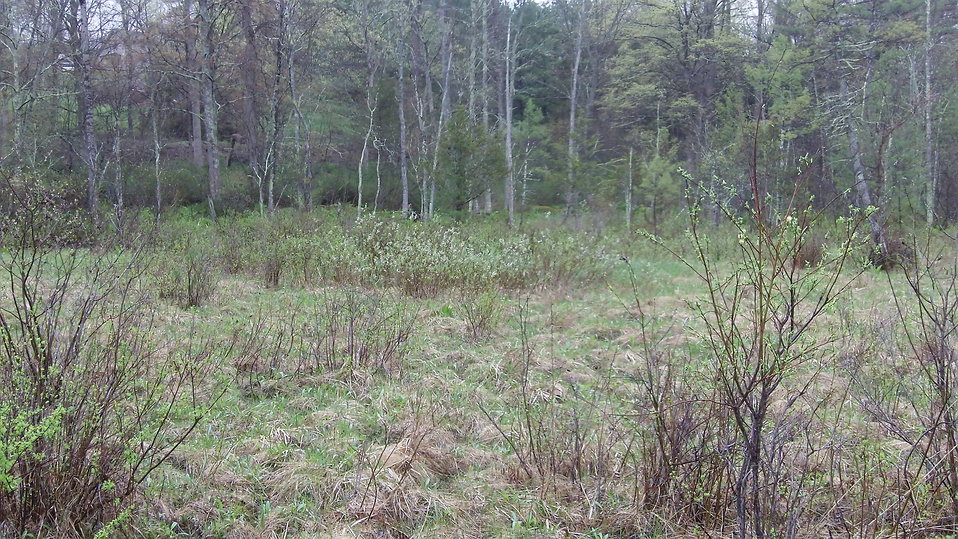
New England cottontail habitat

Most of the landscape has succeeded out of the growth stage or dense structure that rabbits need. Where young forests and shrub patches do exist, many are isolated and small.